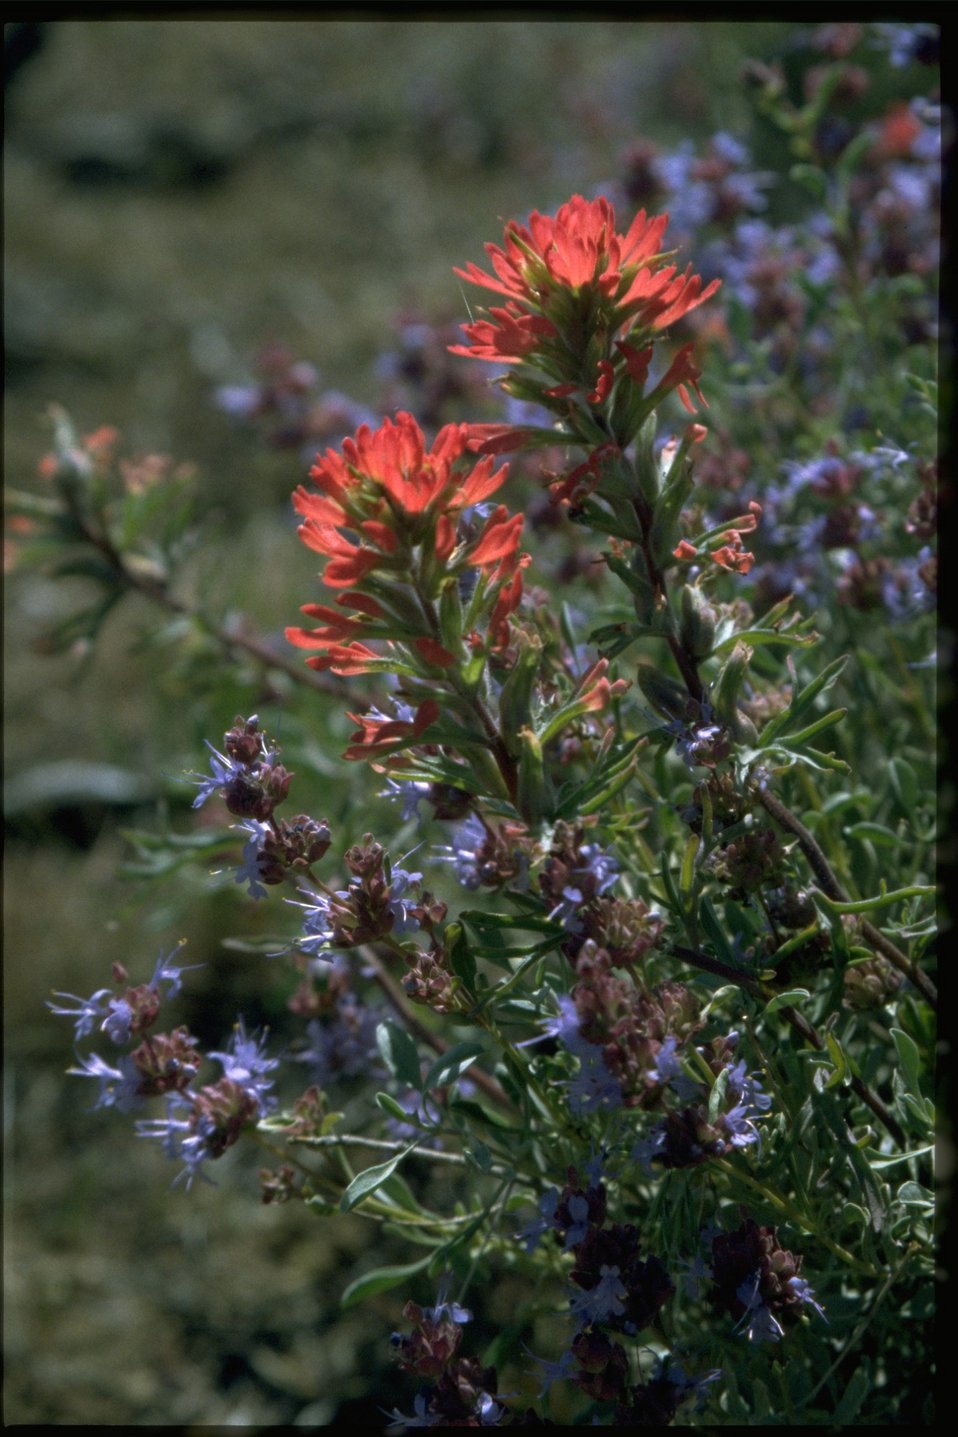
Medium shot of Castilleja and Salvia dorrii.